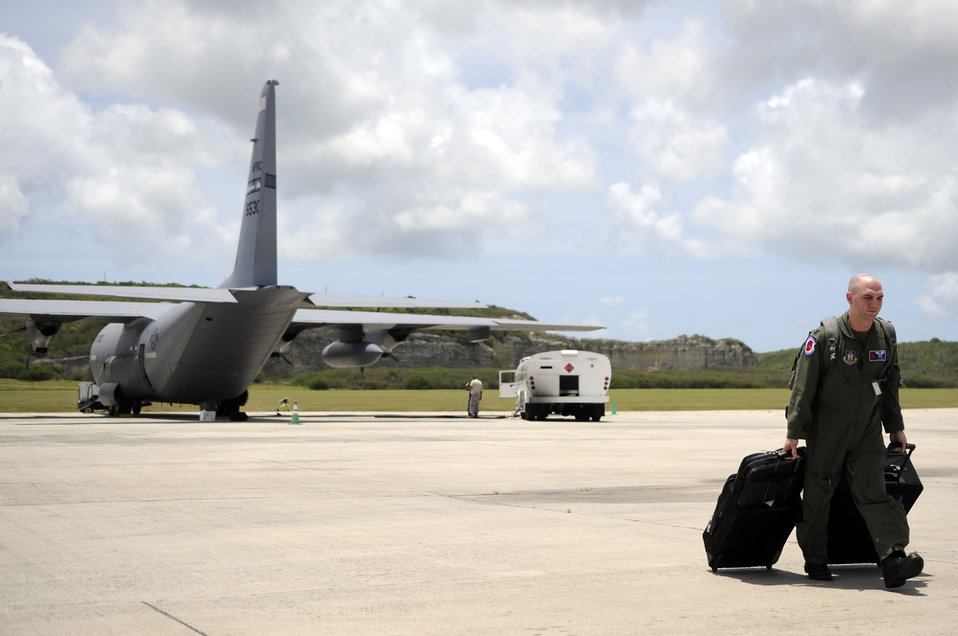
Airmen prep for upcoming hurricane season

Capt. Tobi Baker arrives at St. Croix, V.I., after a training mission on a WC-130J Hercules from Keesler Air Force Base, Miss. Captain Baker is an aerial weather reconnaissance officer assigned to the Hurricane Hunters of the 53rd Weather Reconnaissance Squadron.